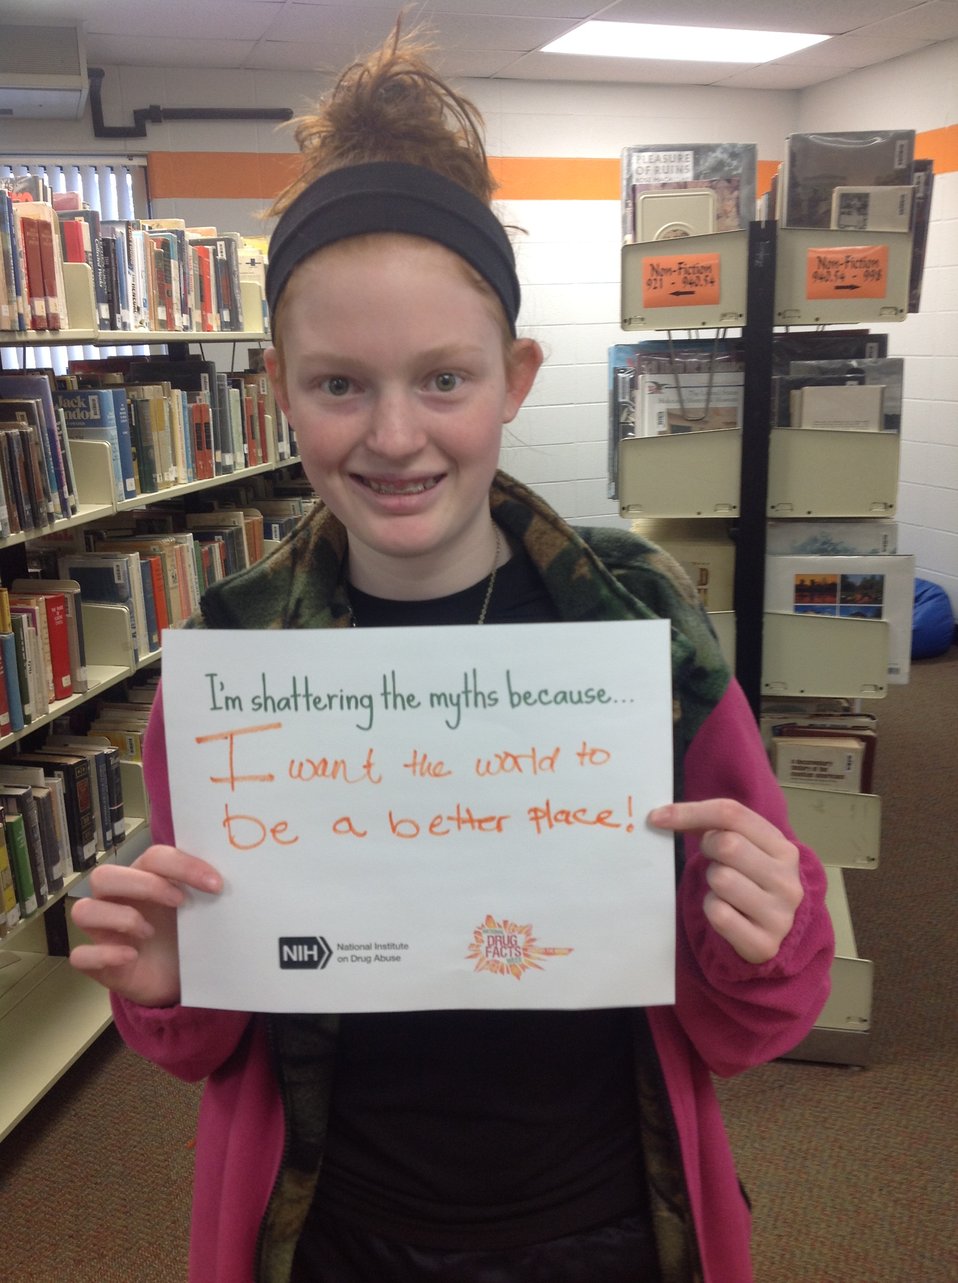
I'm Shattering the Myths Because...

Teenagers from the Van Buren County SAFE Coalition's, Youth Leadership Council (YLC) in Keosauqua, Iowa participate in various events during National Drug Facts Week, 2014.